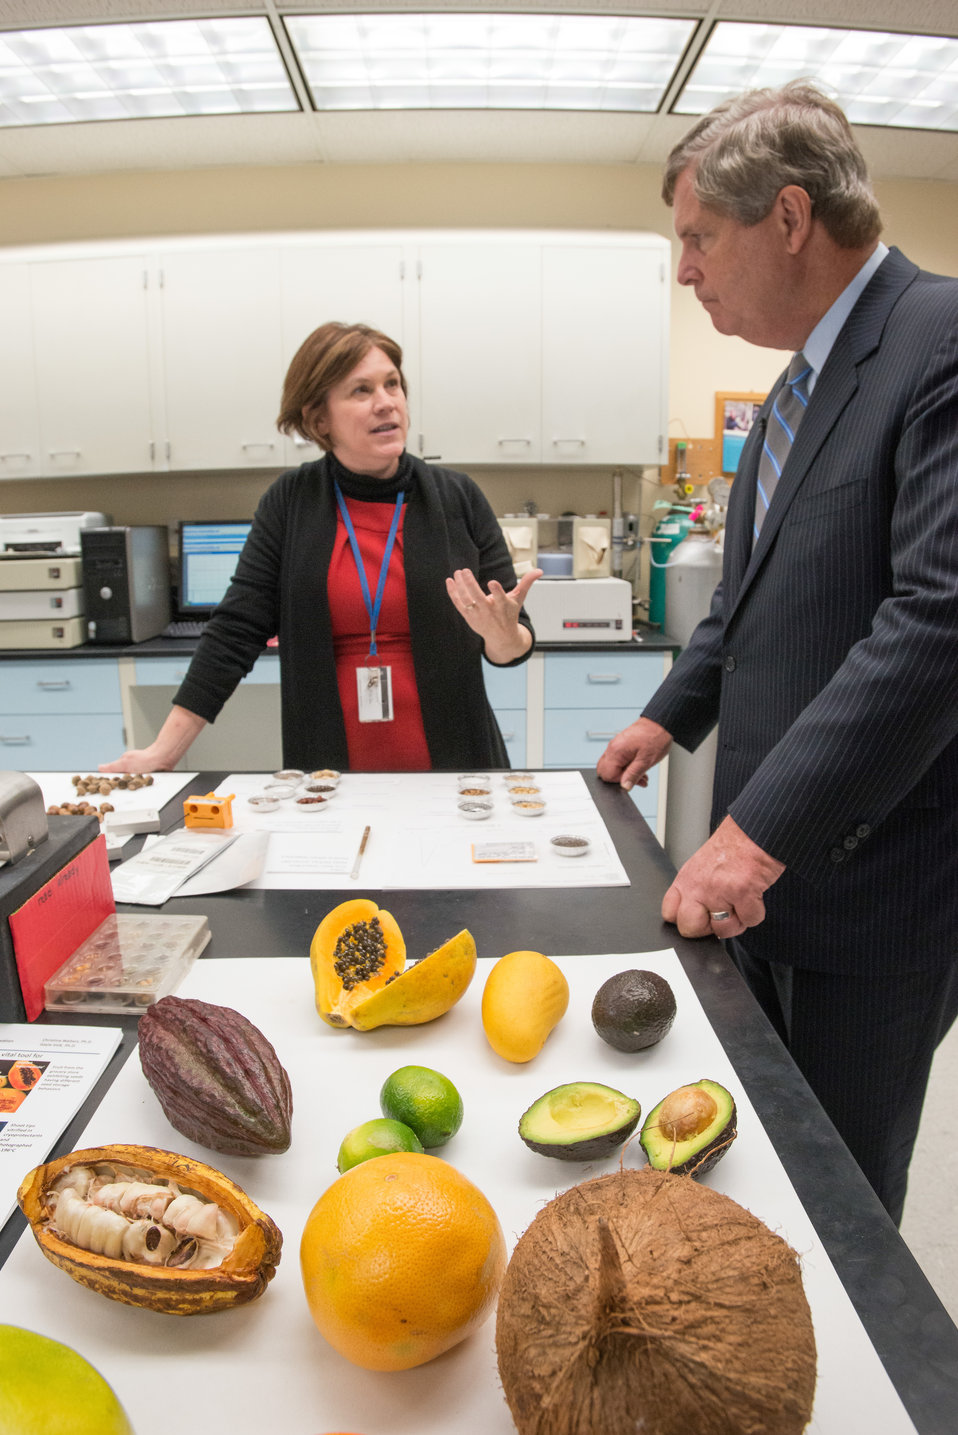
U.S. Department of Agriculture (USDA) Agriculture Research Service (ARS) National Center for Genetic Resources Preservation (NCGRP) Plant Germplasm Preservation Research Unit (PGPRU) Research Leader, Lead Scientist Dr. Christina Walters, explains to Agriculture Secretary Tom Vilsack the research that is being conducted, in Ft. Collins, CO, on Wednesday, Nov. 6, 2013.